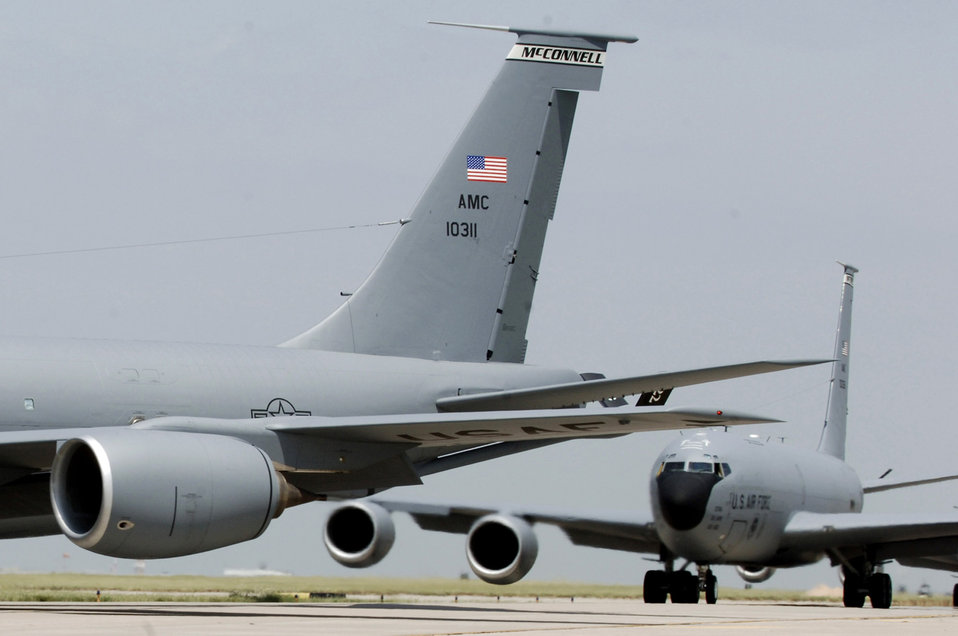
Elephant walk

KC-135 Stratotankers turn onto a taxiway to form the elephant walk formation right behind each during a generation exercise Aug. 5 at McConnell Air Force Base, Kan. The exercise showcased the base aircrews' capability to prepare a flight and take off within minutes of being notified of a mission.